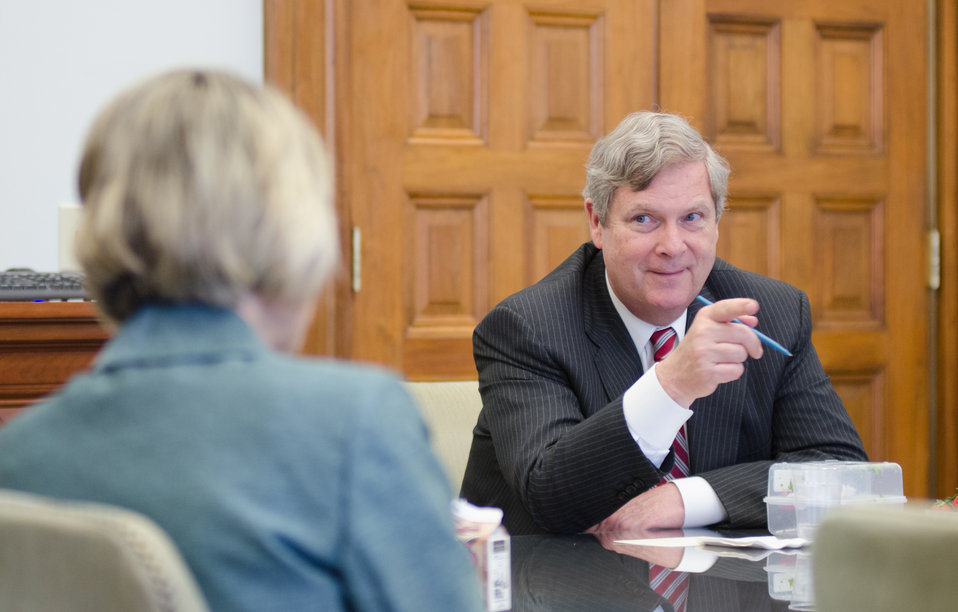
U.S. Department of Agriculture (USDA) Secretary Tom Vilsack, talks during a Brown Bag Lunch that he periodically has with employees, in his conference room, on Tuesday, April 9, 2013, in Washington, D.C.